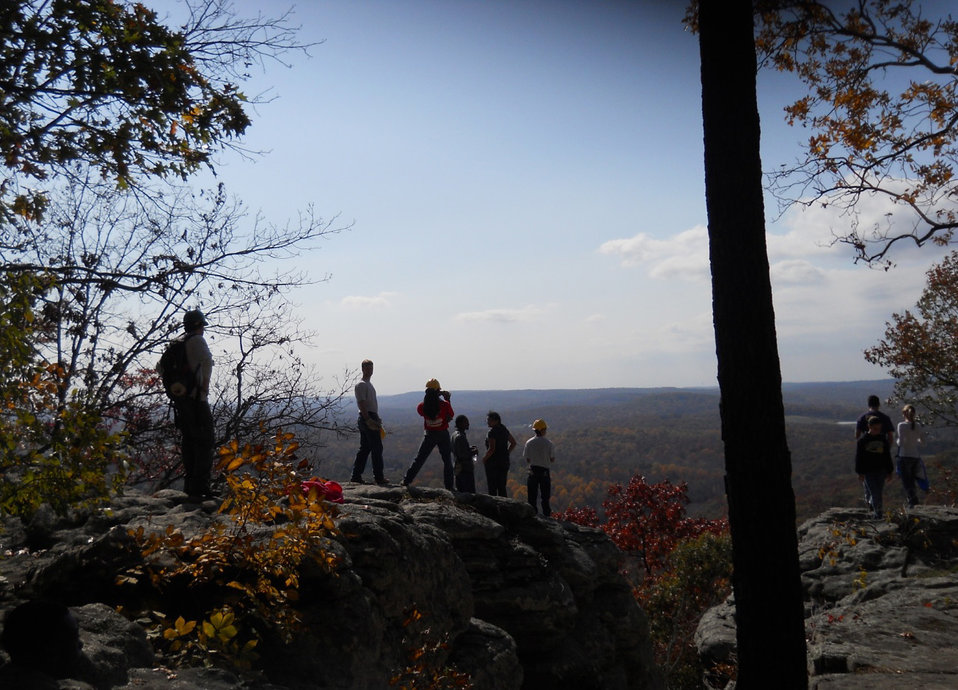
Wilderness 50

Golconda Job Corps students at overlook on Indian Point Trail in Garden of the Gods Wilderness in Illinois.